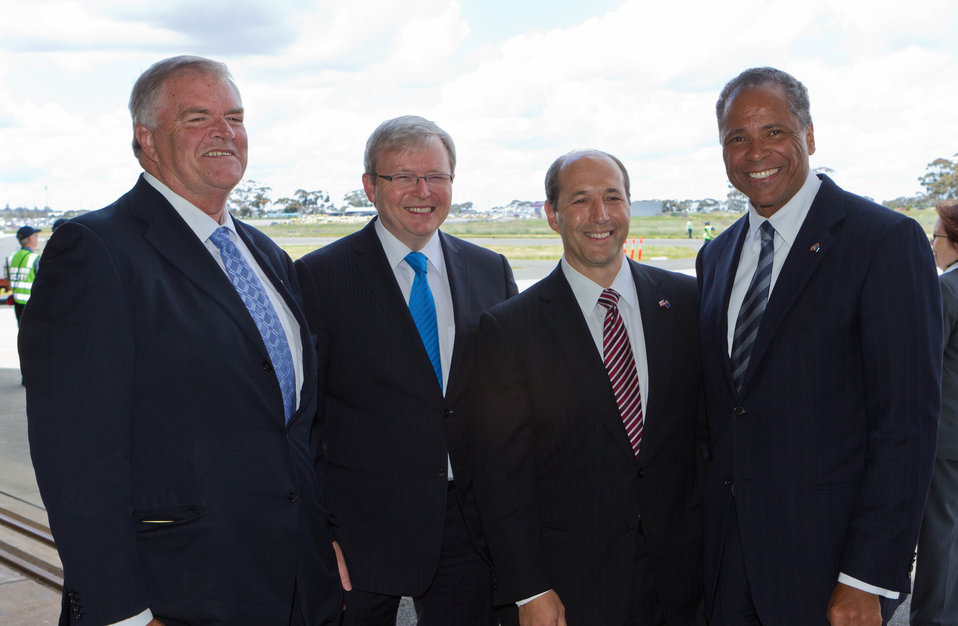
Australian Ambassador Beazley, Australian Foreign Minister Rudd, Ambassador Bleich, and Consul General Thurston Await the Secretary's Arrival

(Left to right) Australian Ambassador to the U.S. Kim Beazley, Australian Foreign Minister Kevin Rudd, U.S. Ambassador to Australia Jeff Bleich, and U.S. Consul General to Australia Michael Thurston await U.S. Secretary of State Hillary Rodham Clinton's arrival in in Melbourne, Australia, on November 7, 2010.